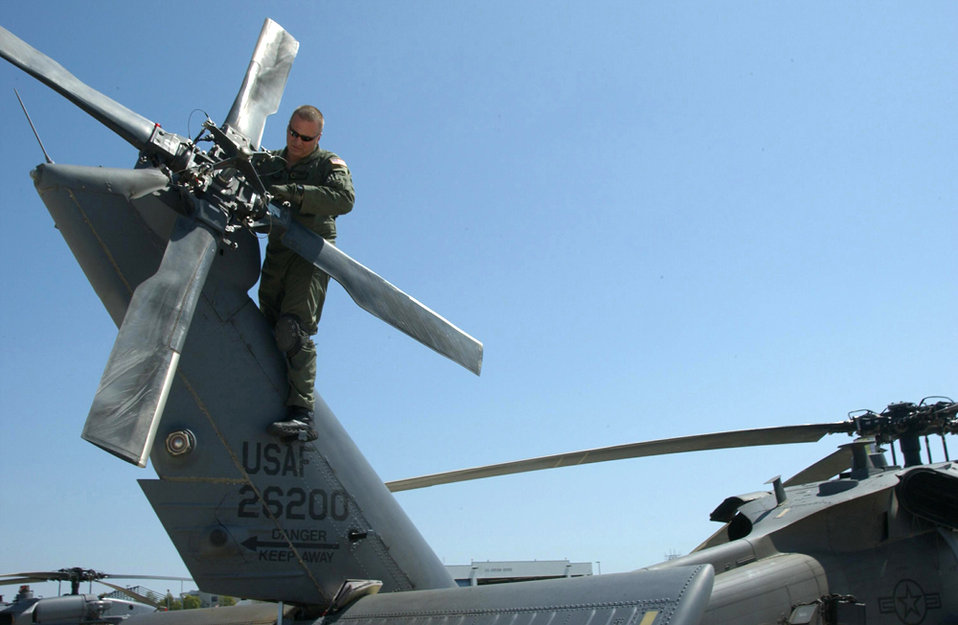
A 'chopper' landing

SAN DIEGO -- Tech. Sgt. Ron Merle inspects an HH-60G Pave Hawk before it flies for water-based landings on a Navy ship near here. The landings were part of water-rescue training for 55th Rescue Squadron HH-60G helicopter crews based at Davis-Monthan Air Force Base, Ariz. Sergeant Merle is a crew chief.